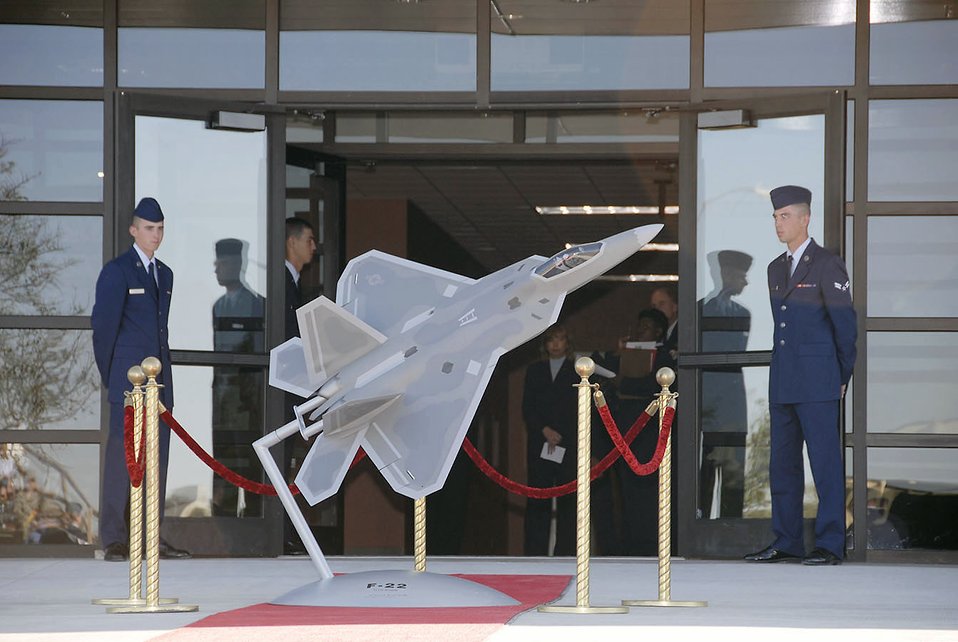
New concept in maintenance training comes to fruition

Airmen in training stand outside the new F-22 Raptor Maintenance Training Facility following the opening ceremony in October 2007 at Sheppard Air Force Base, Texas.